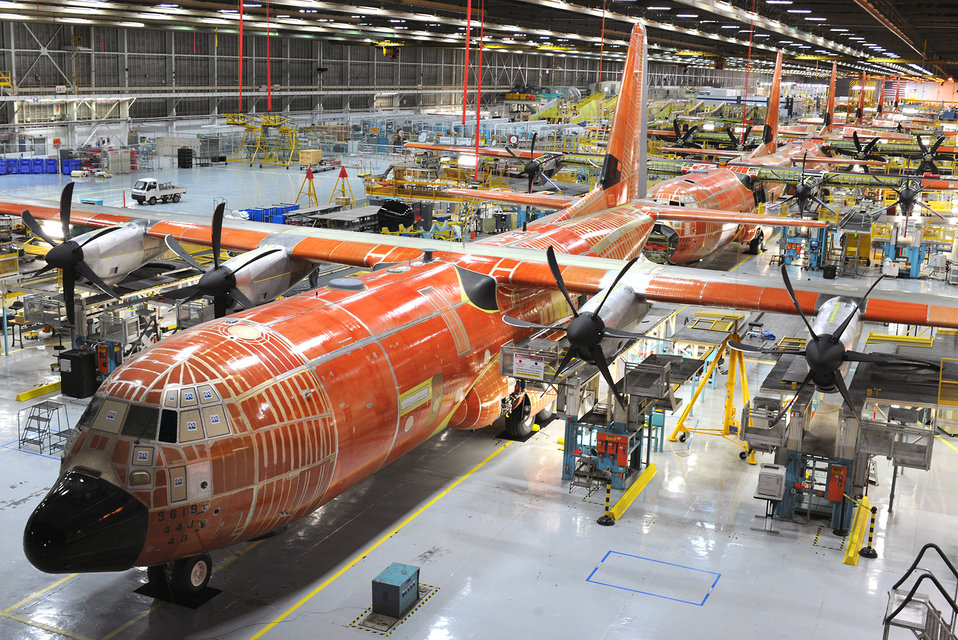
Air Force officials unveil recue aircaft model

The HC/MC-130 Super Hercules aircraft are produced at the Lockheed Martin Aeronautics Company. Each aircraft goes through 13 different stations during production.